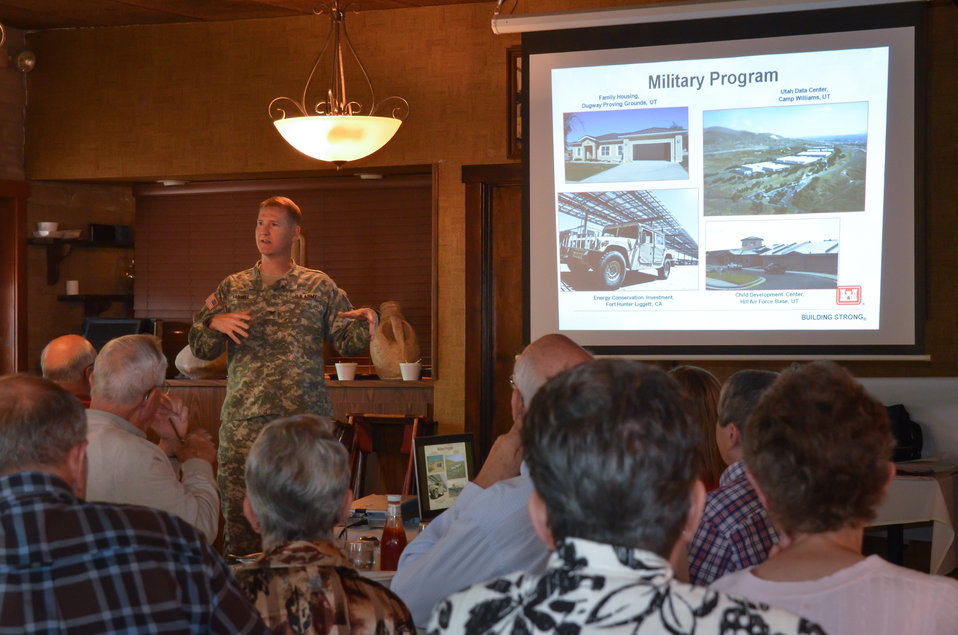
Sacramento District's 33rd annual retiree luncheon

U.S. Army Corps of Engineers Sacramento District commander Col. Mike Farrell updated the crowd of 36 former employees on many of the district's ongoing civil and military projects during the district's 33rd annual retiree luncheon May 20, 2014 in West Sacramento, Calif.